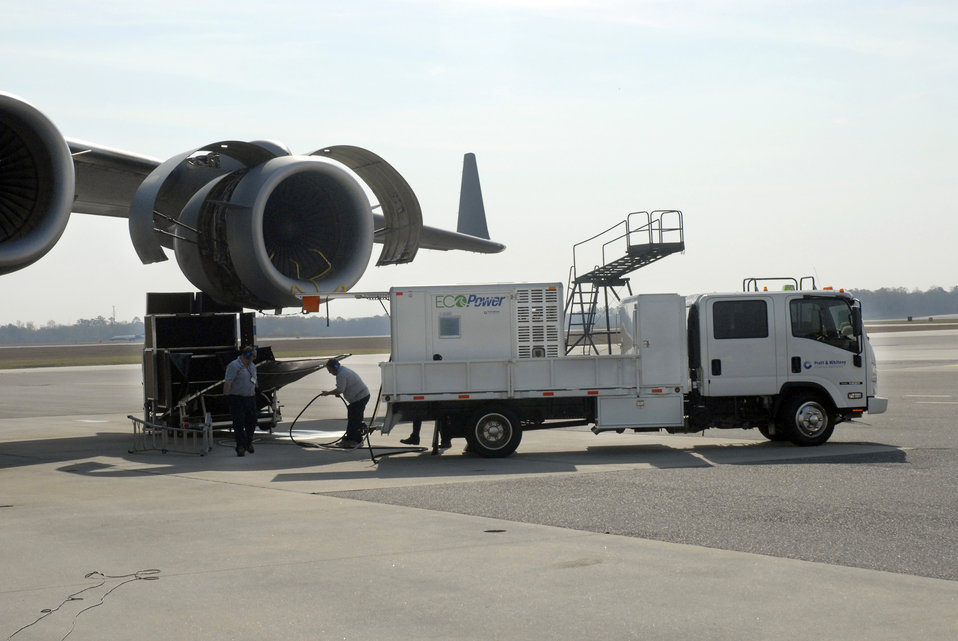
AMC goes green with aircraft engine washes

Contractors wash a C-17 Globemaster III engine with the EcoPower Engine Wash System March 12 at Charleston Air Force Base, S.C. The closed-loop system collects and recycles the runoff water, keeping potentially contaminated water off of the flightline and running off into the surrounding areas.